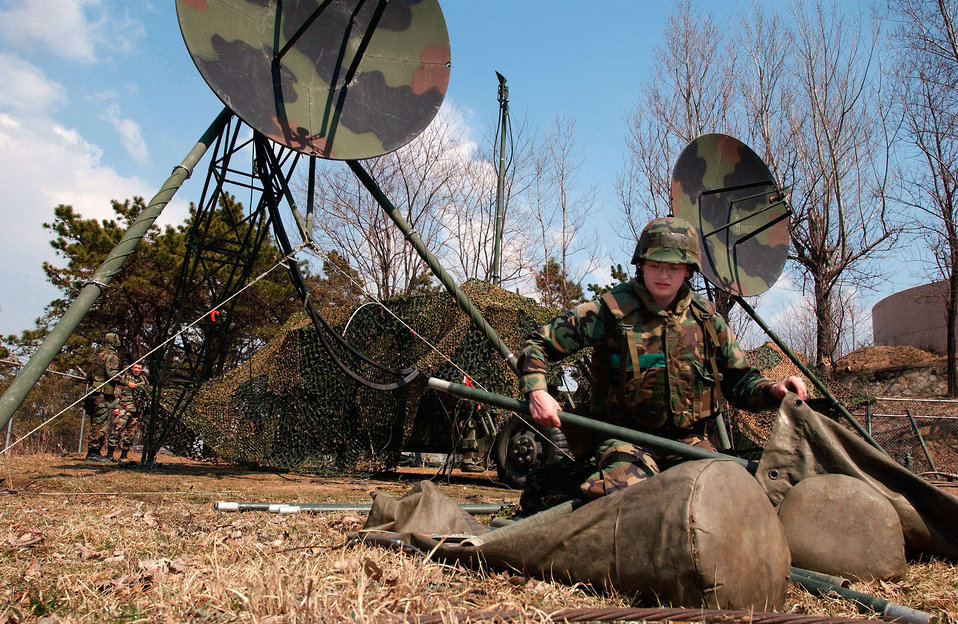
Foal Eagle

OSAN AIR BASE, South Korea -- Airman 1st Class Leah Fisk puts poles together for the camouflage screening system to cover the 2000 watt tactical wide band communication system here March 18. Fisk is deployed supporting Exercise Foal Eagle.